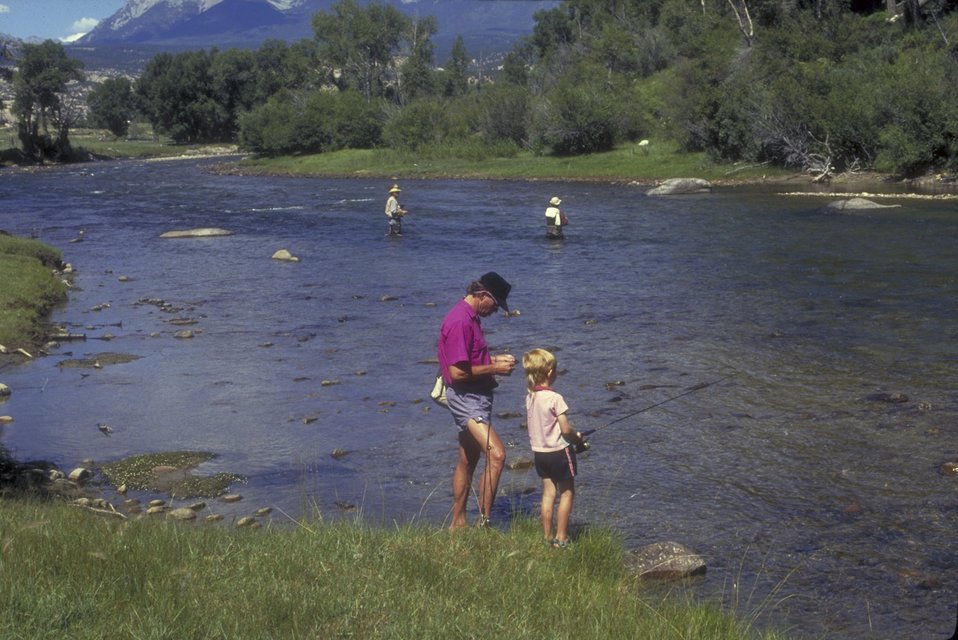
Fishing on the Arkansas River.